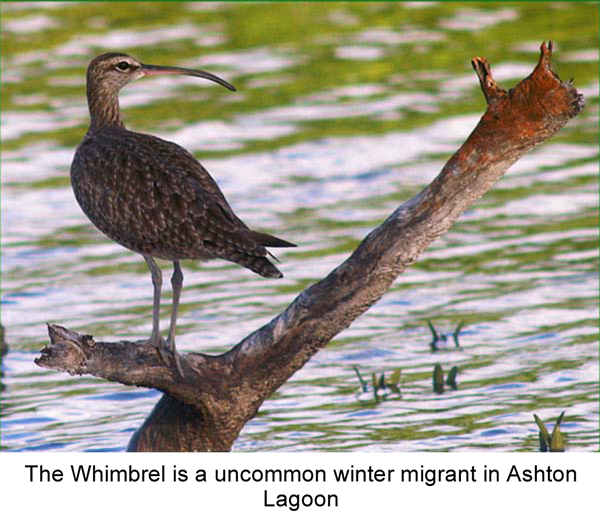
Workshop-Report-Ashton-Lagoon-Final